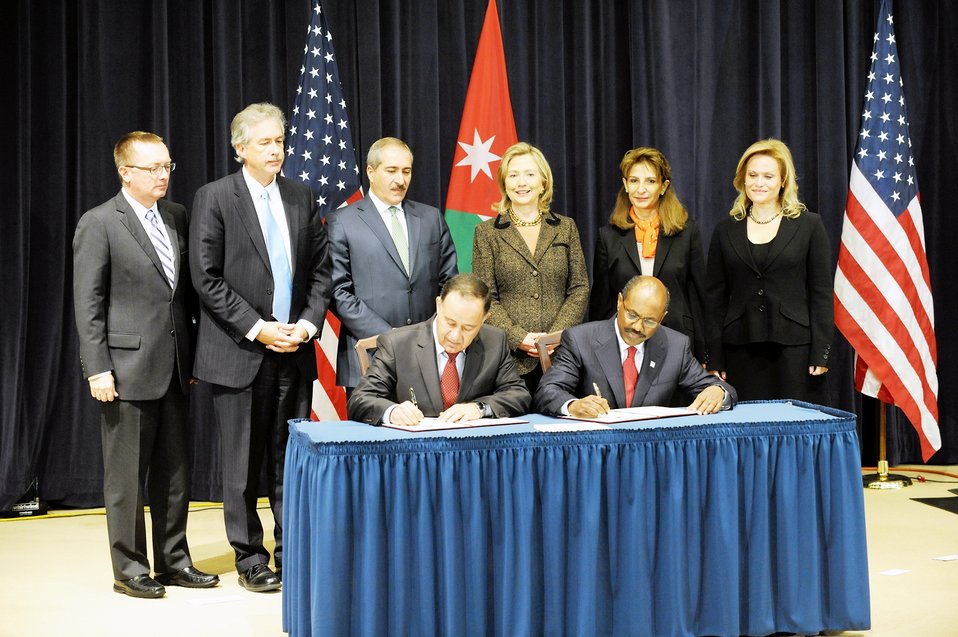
Secretary Clinton Presides Over the Signing Ceremony of the Millennium Challenge Corporation Compact With Jordan

U.S. Secretary of State Hillary Rodham Clinton presides over a Signing Ceremony of the Millennium Challenge Corporation Compact with Jordan at the U.S. Department of State in Washington, D.C., on October 25, 2010.